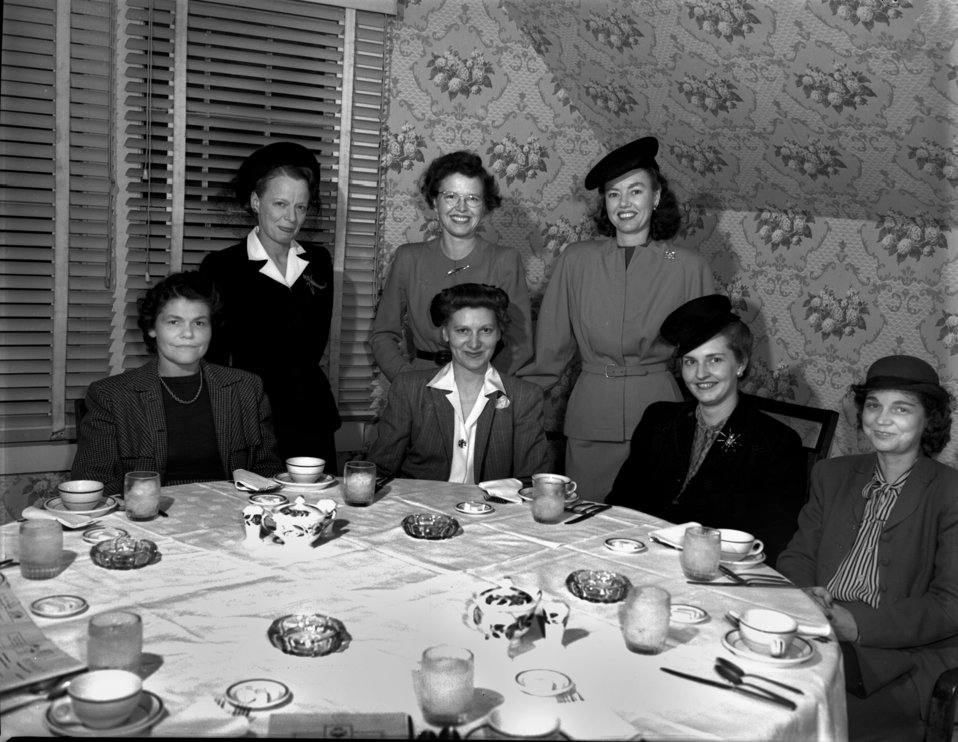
Red Cross Lunch at Mayflour Inn Oak Ridge

3238-2 DOE photo Ed Westcott 1-15-1947 Oak Ridge Tennessee